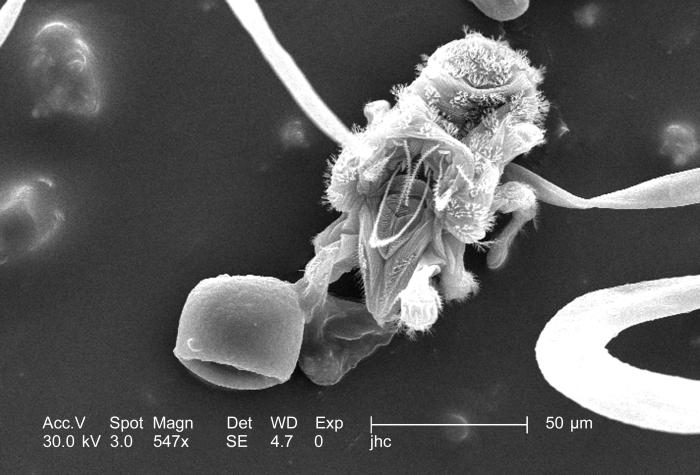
Under a moderately high magnification of 547x, this scanning electron micrograph (SEM) revealed the presence of numbers of mites from the specie Nanorchestes sp., Family Nanorchestidae, which were highly festooned with an adornment of chitinous exoskeletal outcroppings. Under higher magnifications, i.e., PHIL 8808, 8809, these exoskeletal complexities were better appreciated in their diaphanous majesty.